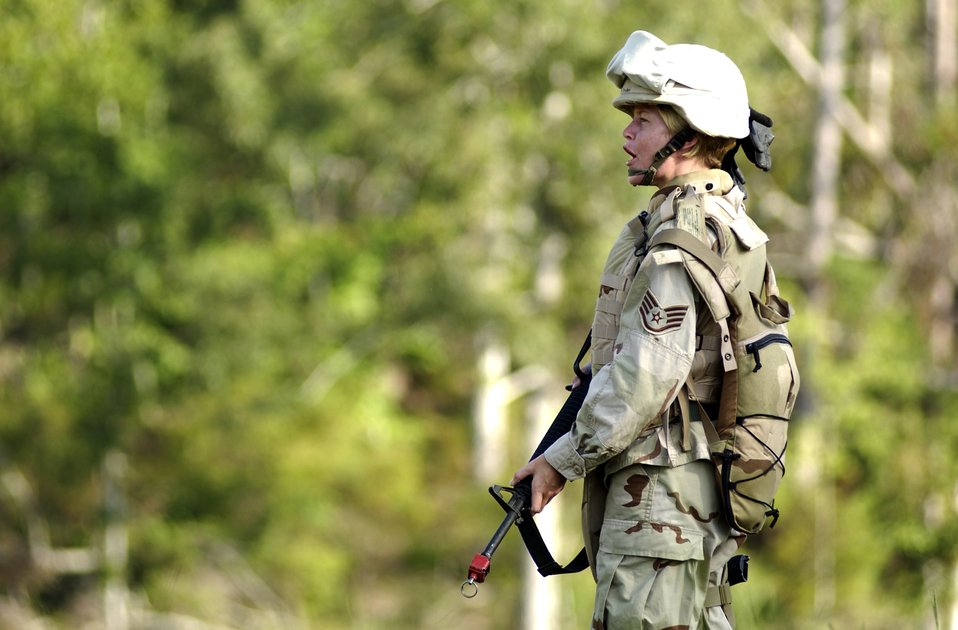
Air Force trains to fill Army deployments

Staff Sgt. Laura Dryden sounds off after her team finds another location using the land navigation techniques taught to them during in-lieu-of training Aug. 30 at Camp Shelby, Miss. Camp Shelby is one of several Army installations providing training to military personnel preparing to deploy to Southwest Asia.